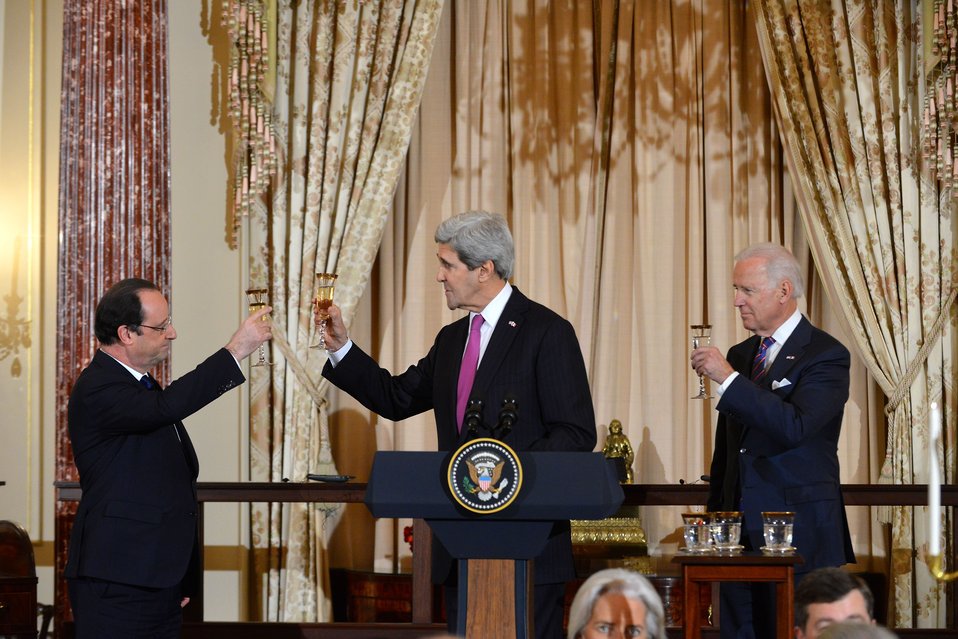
Secretary Kerry, Vice President Biden, and French President Hollande Toast the U.S.-France Relationship

U.S. Secretary of State John Kerry, French President Francois Hollande, and Vice President Joe Biden toast the U.S.-France relationship during a State Lunch in President Hollande's honor at the U.S. Department of State in Washington, D.C., on February 11, 2014.